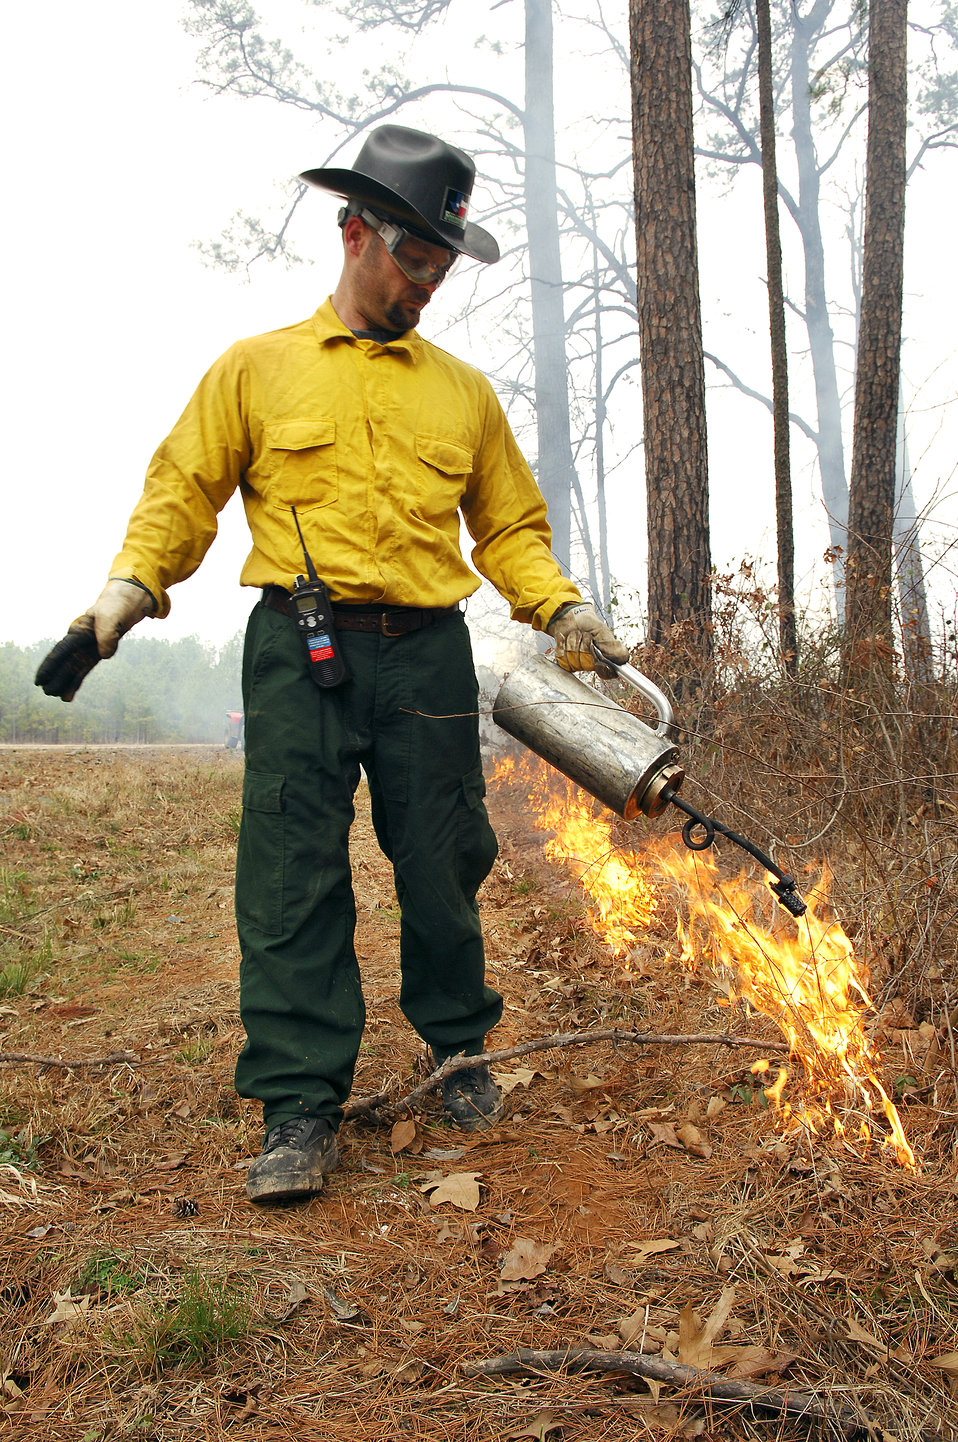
Controlled burn

BARKSDALE AFB, La. (AFPN) -- Michael Gibson sets low-lying brush and leaves ablaze with a drip torch. The 200-acre burn Jan. 26 was a timber stand improvement burn, and is one of 10 scheduled controlled burns on Barksdale's East Reservation this year. The burning is conducted to reduce overall fire fuel on the ground, which in turn helps prevent forest fires. Mr. Gibson is a biological science technician here.